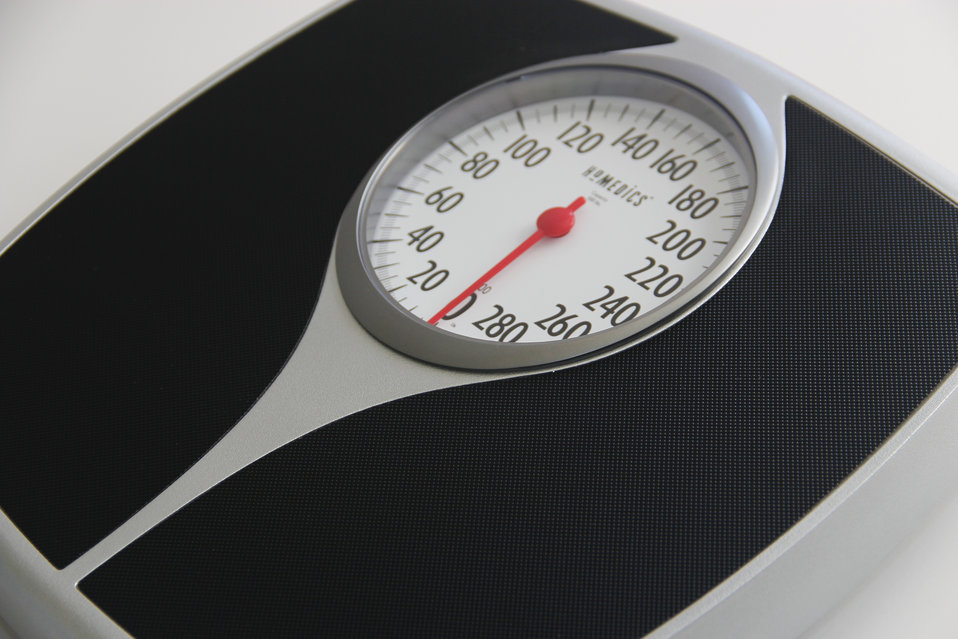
This image depicts a spring scale used to determine ones weight in pounds. When a person steps unto this scale, springs located within the housing of the scale compress due to the effect that the force of gravity has upon the person's body. By measuring the change in tension placed upon the internal springs, a reading is provided.